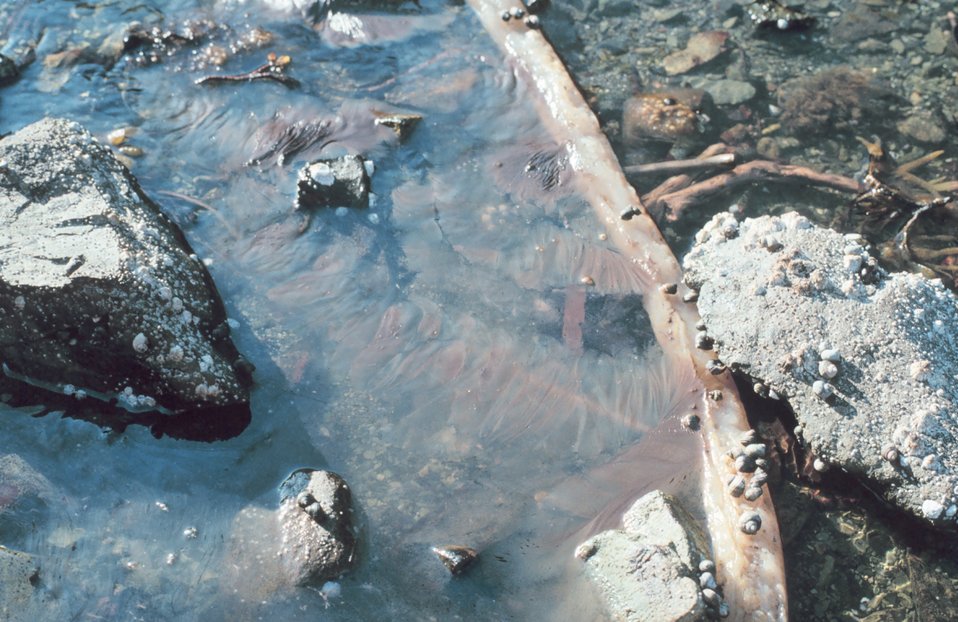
Oil scum one year after the spill on Prince William Sound